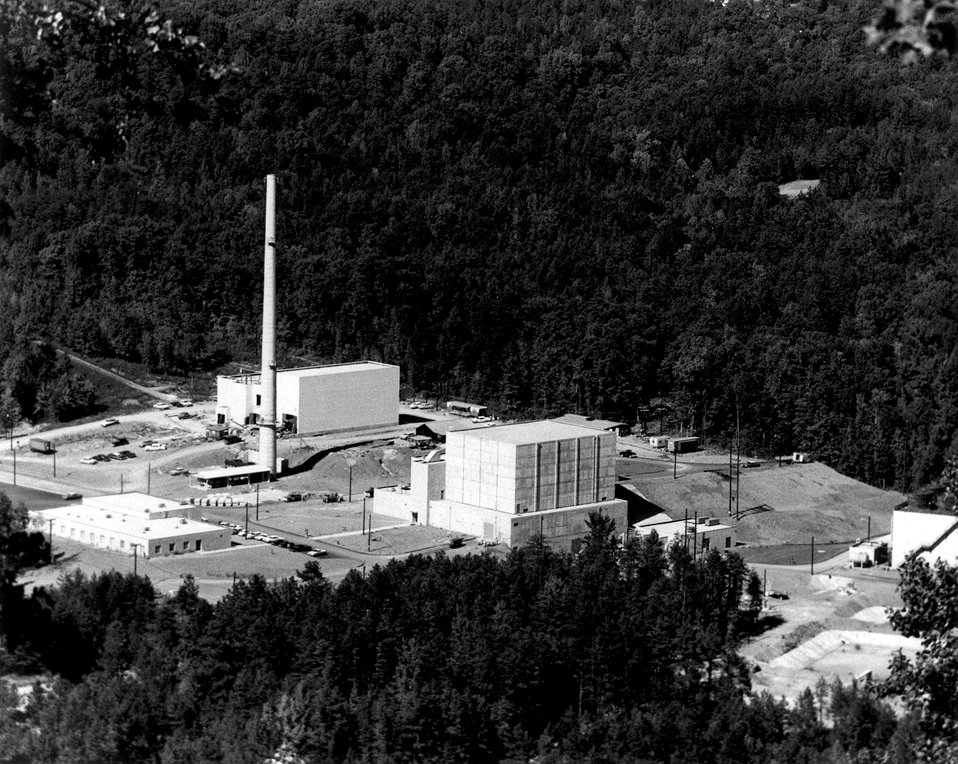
Nestled in a wooded valley at oak Ridge National Laboratory is the High Flux Isotope Reactor (HFIR) which started its first nuclear operation August 25, 1965. c. 1966